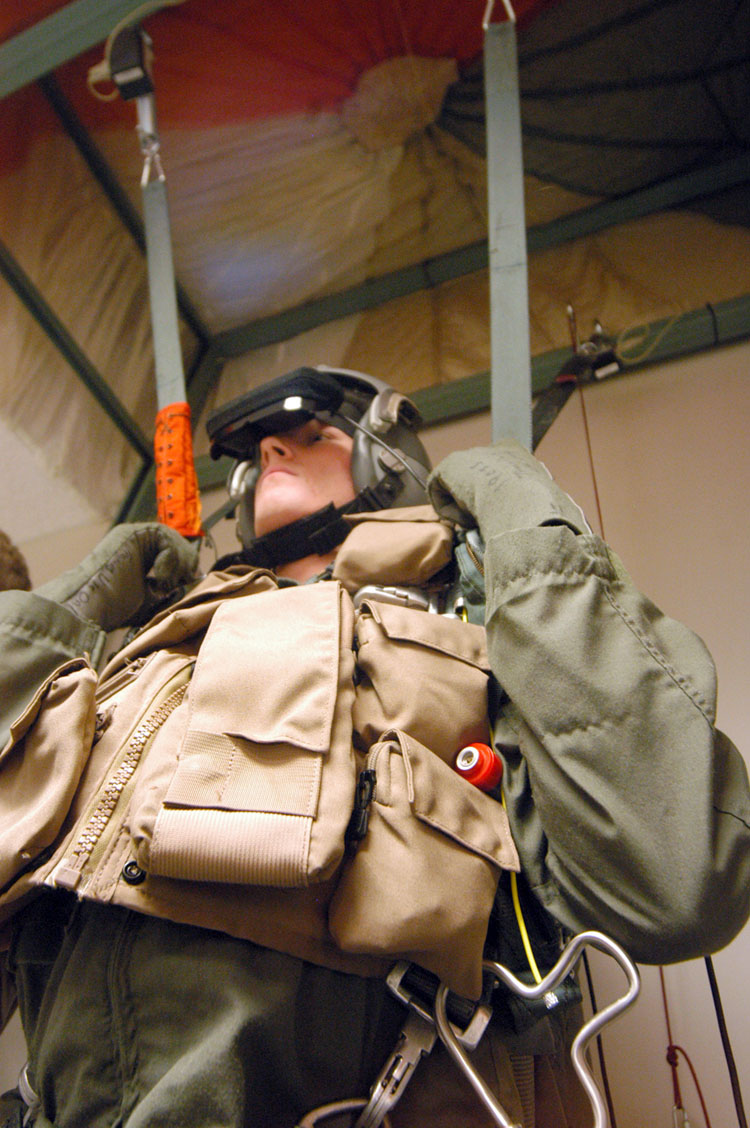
Virtual reality prepares students for parachuting

ROBINS AIR FORCE BASE, Ga. -- Airman 1st Class Zach Lauritzen hangs from the harness trainer during his